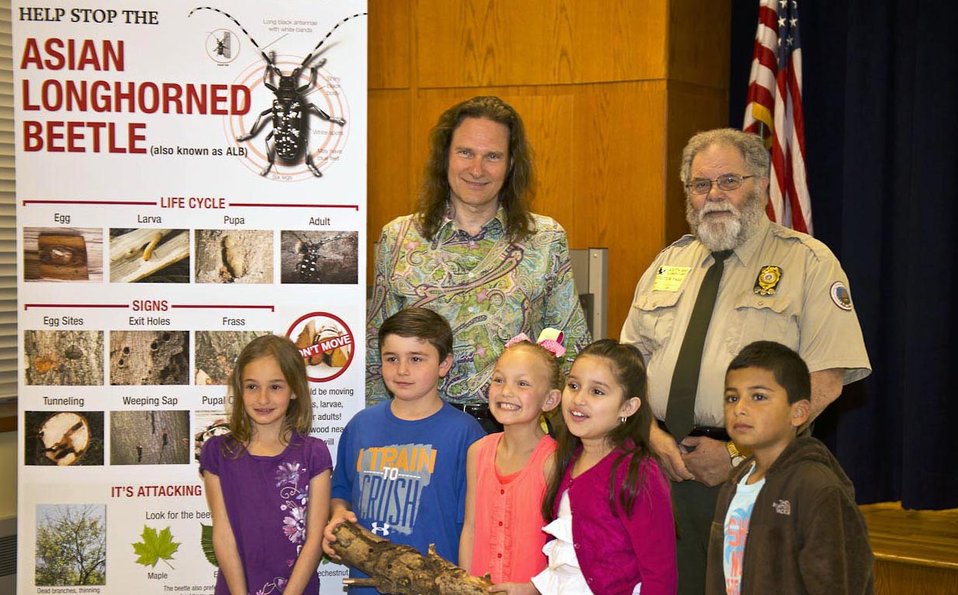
The Asian Longhorn Beetle (ALB) Eradication Program staff presents the story of the Asian Longhorned Beetle (ALB) to Kindergarten through 2nd graders at the South Bay Elementary School in West Babylon, NY on Friday, May 23, 2014. The ALB story is told using gestures and movements to get students engaged and informed about how they can check trees for the beetle this summer. (Story teller Jonathan Kruk, U.S. Department of Agriculture (USDA) Animal and Plant Health Inspection Service (APHIS) ALB Eradication Program New York Project Manager Joseph Gittleman, and South Bay Elementary School Students).